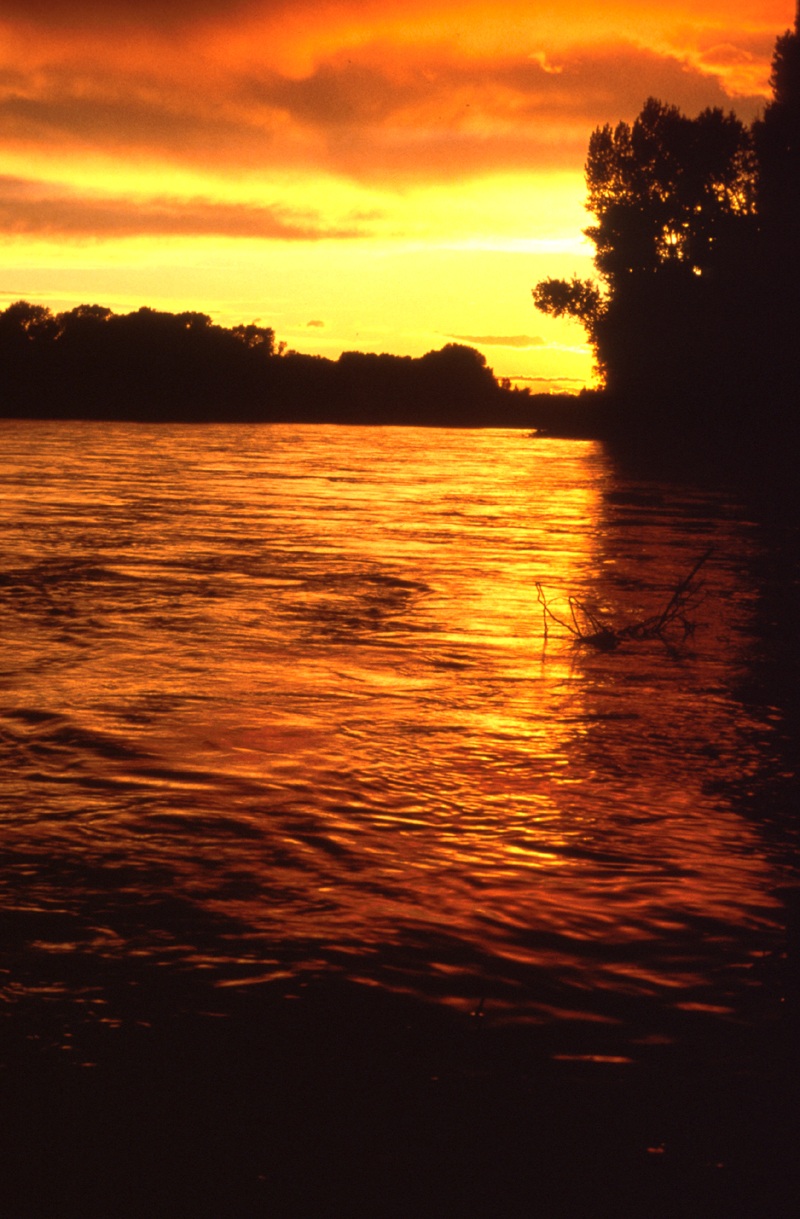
South Fork of the Snake River